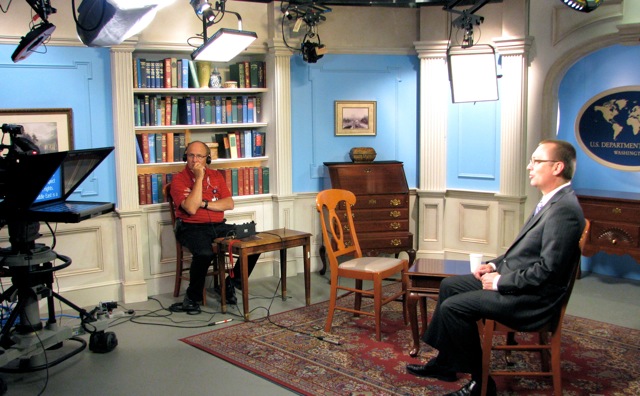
Assistant Secretary Feltman Records Message

U.S. Assistant Secretary of State for Near Eastern Affairs Jeffrey Feltman records a video message on U.S. policy on Iraq at the U.S. Department of State in Washington, D.C., on June 10, 2010.